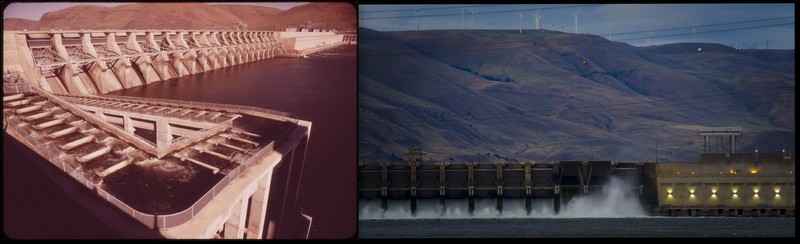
John Day Dam, Columbia River 1973 and 2012

'Then' Documerica Photo: May, 1973 The John Day Dam Viewed From the Washington Side of the Columbia River, Looking Towards the Oregon Shore by David Falconer.
'Now' State of the Environment Photo: June, 2012 John Day Dam across the Columbia River, with windmills near Goldendale, WA visible along the ridge line in the background by Scott Butner.

David Falconer documented the fuel shortage in the west during the 1970s, as well as water pollution in the area at the time. Falconer took photos from April 1973 to May 1974 mainly across the states of Oregon and Idaho.

Join in at www.flickr.com/groups/ourenvironment